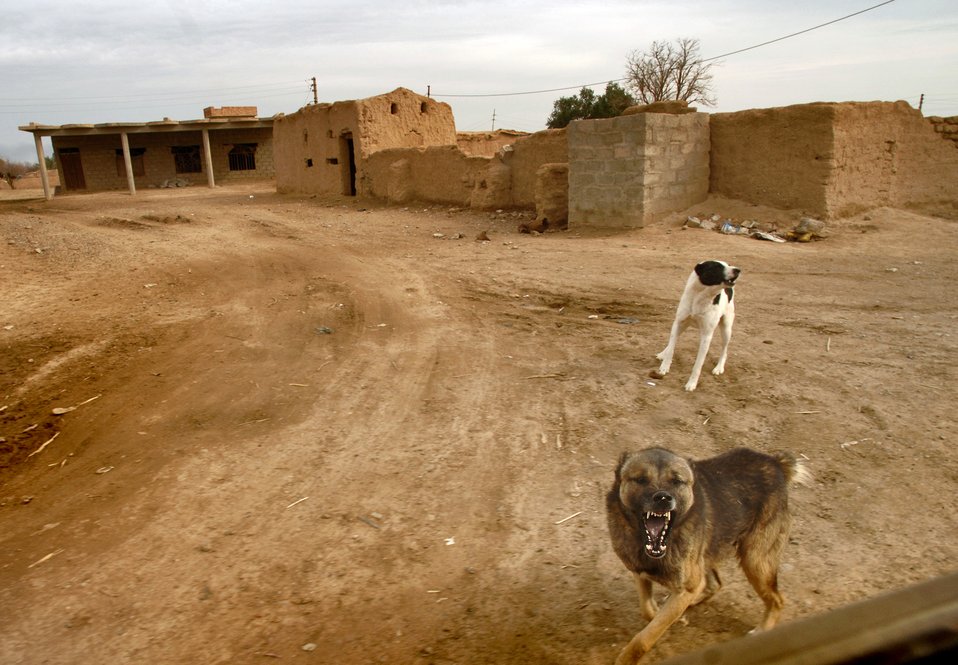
Infrastructure inspection

KIRKUK, Iraq (AFPN) -- Dogs bark at the 732nd Expeditionary Civil Engineer Squadron's petroleum oil and infrastructure team convoy as it passes through an Iraqi community. They are traveling travel throughout the region to meet with Iraqi infrastructure facilities leaders.